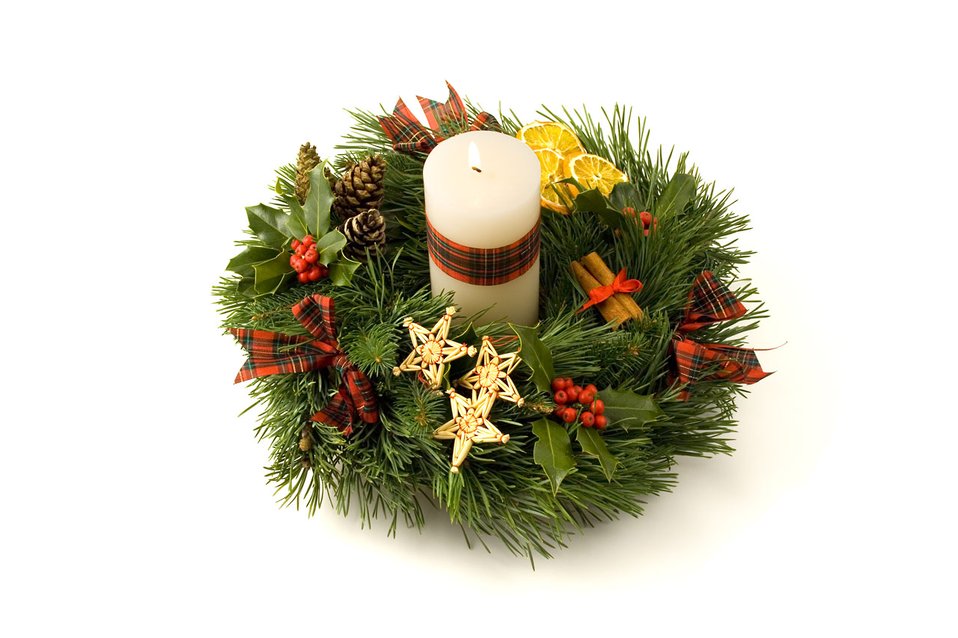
Advent wreath on white background.